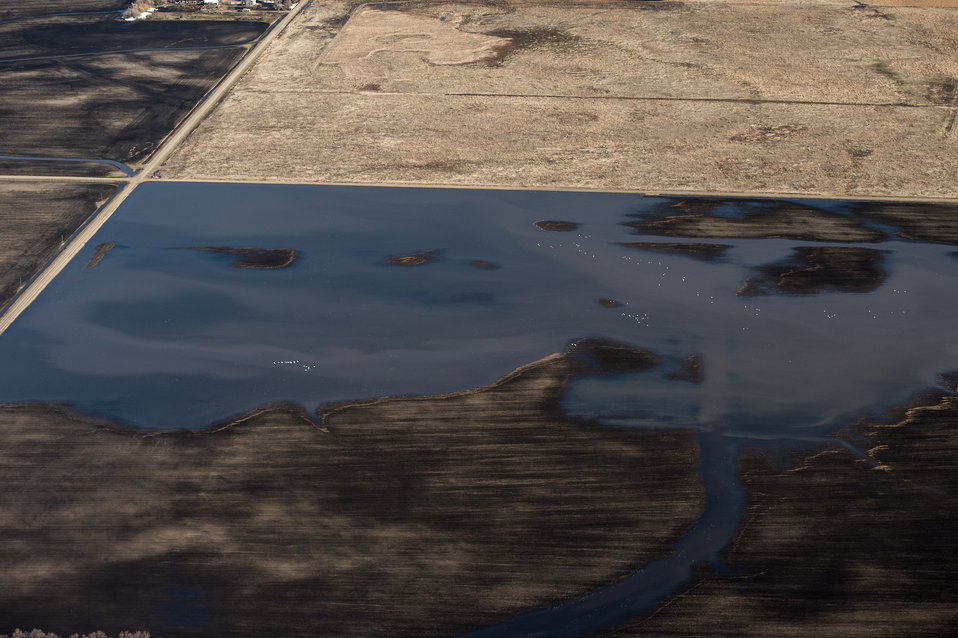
Vertin, U.S. Department of Agriculture (USDA) Natural Resources Conservation Service (NRCS) Wetland Reserve Program (WRP) in Wilkin County, MN, on Tuesday, April 30, 2013. For information about this and other programs from the USDA Red River Basin Initiative (RRBI) please see www.mn.nrcs.usda.gov/news/features13/RRBI.html.